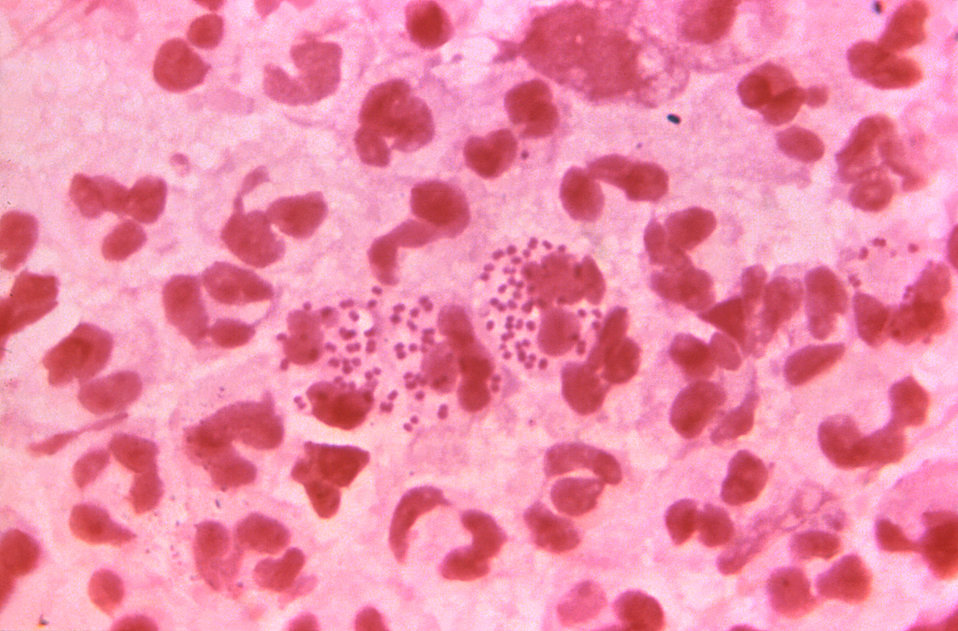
This Gram-stained photomicrograph reveals the presence of intracellular Gram-negative, Neisseria gonorrhoeae diplococcal bacteria, amongst numerous white blood cells (WBCs) known as polymorphonuclear leukocytes, or PMNs.